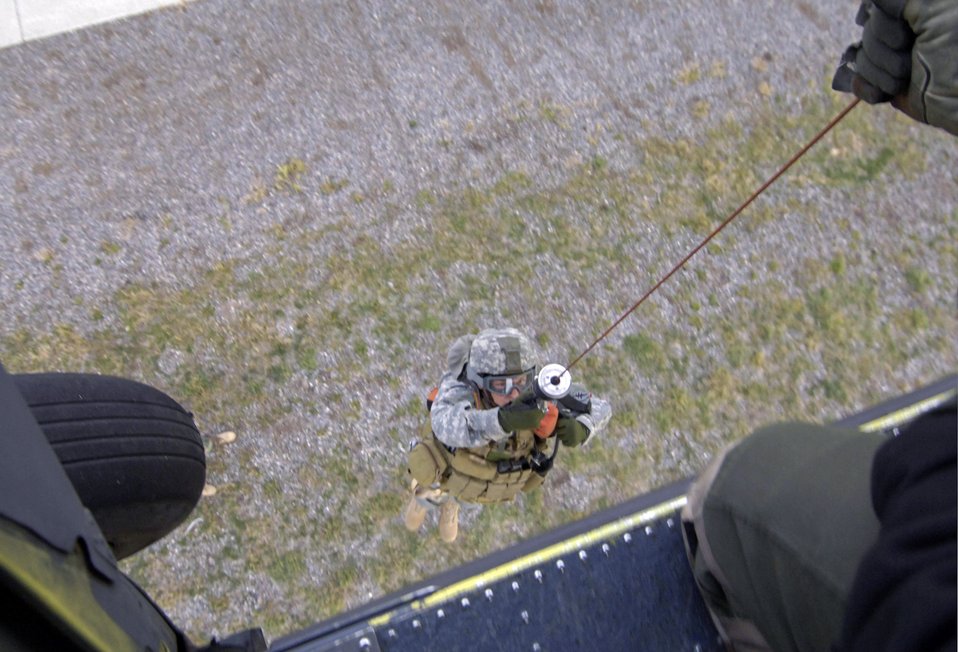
Combat search and rescue training in Utah

A Utah National Guard Soldier is hoisted on board an HH-60 Pave Hawk during a combat search and rescue integration exercise Nov. 9 at Camp Williams, Utah. Members of the 34th Weapons Squadron from Nellis AFB led the search and recovery training. The exercise expanded the integration with Utah's 211th Aviation Group AH-64 Apache Joint Rotary Wing, 4th Fighter Squadron F-16 Fighting Falcon assets from Hill AFB, Utah, and special operations forces. Exercise participants also conducted extensive joint combat search and rescue operations against surface-to-air threats. The exercise is being run held Nov. 6 through 15.